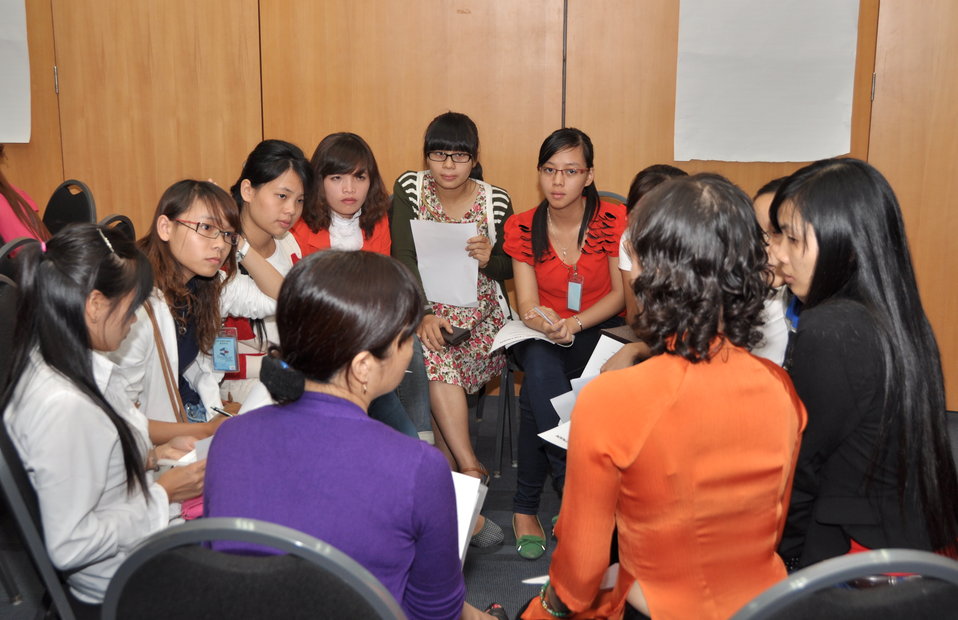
Students join the ‘USAID and Higher Education in Vietnam’ talk

Photo: @USAIDVietnam, November 19, 2012